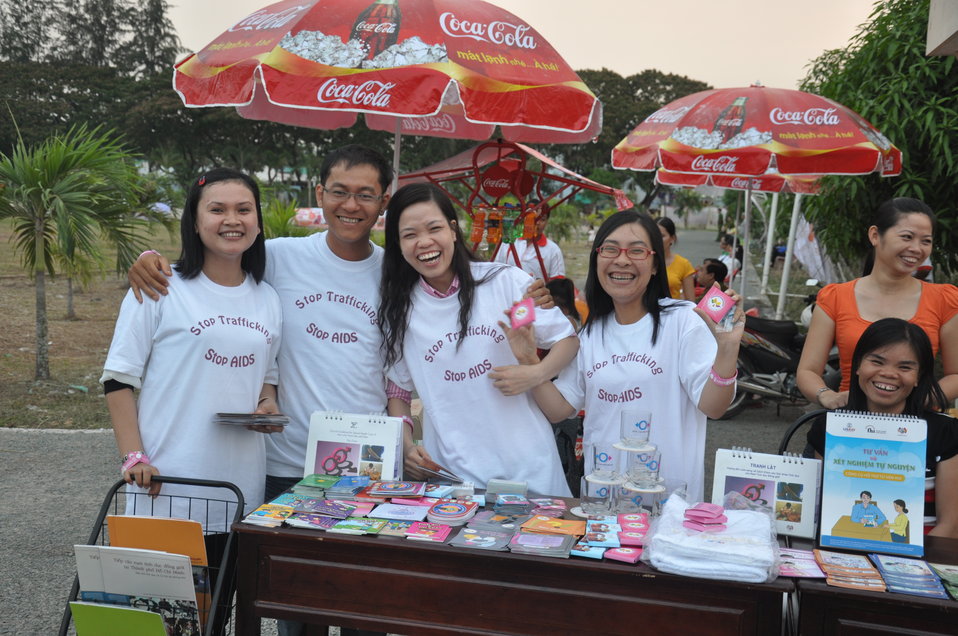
USAID and MTVEXIT concert in Can Tho